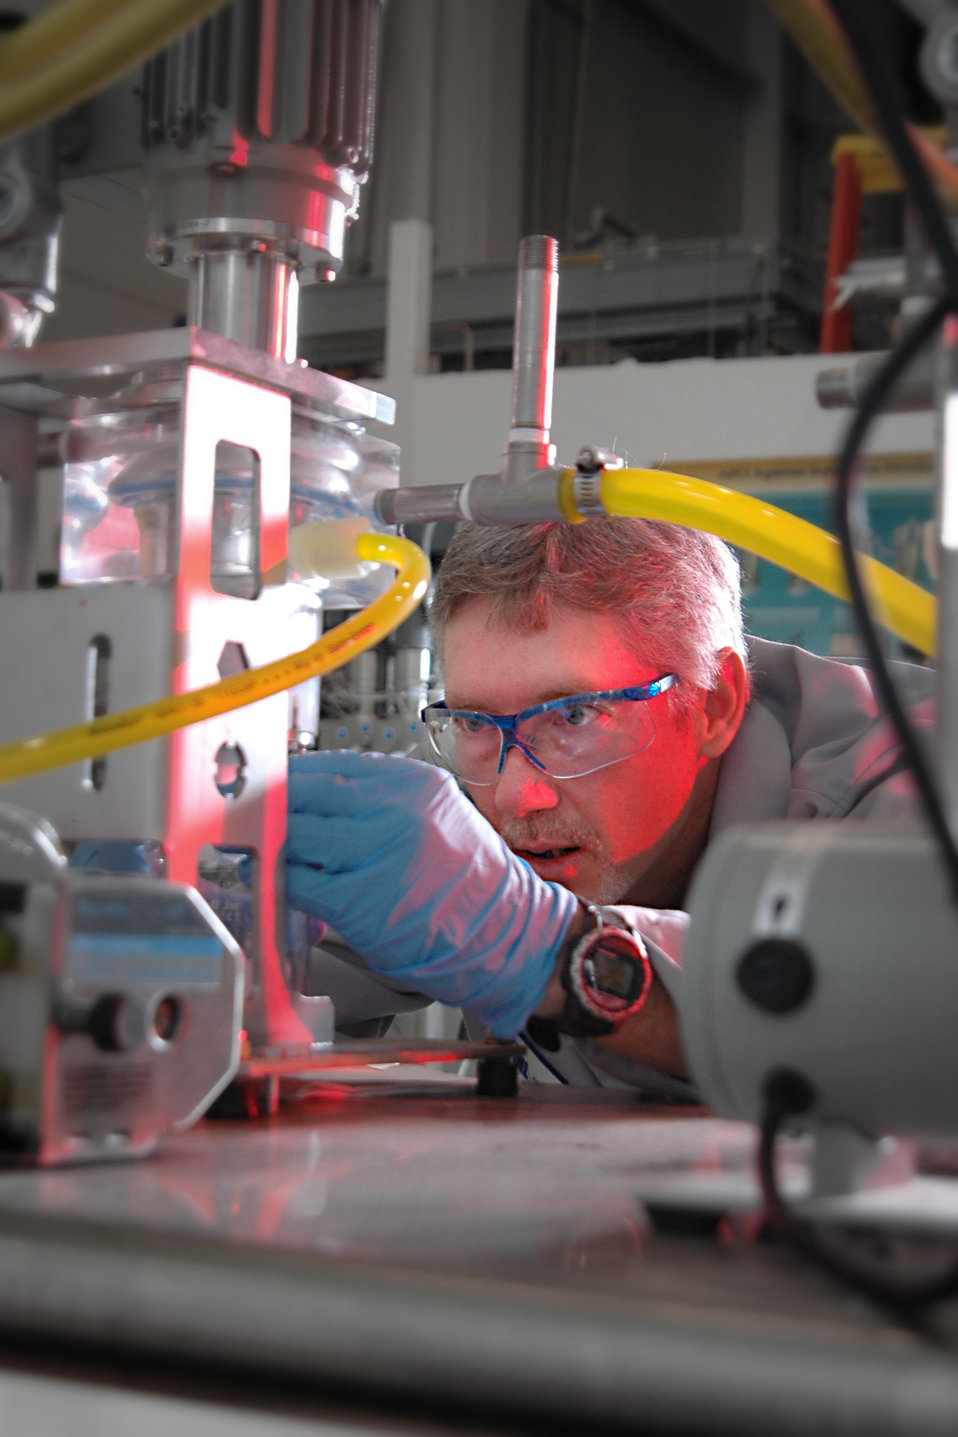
In 1990, at the Idaho National Laboratory, an initial patent was awarded for the annular centrifugal contractor that not only has immeasurably advanced aqueous nuclear fuel processing capabilities, but has also been amended to become an important environmental restoration tool and industrial process effluent separation tool.